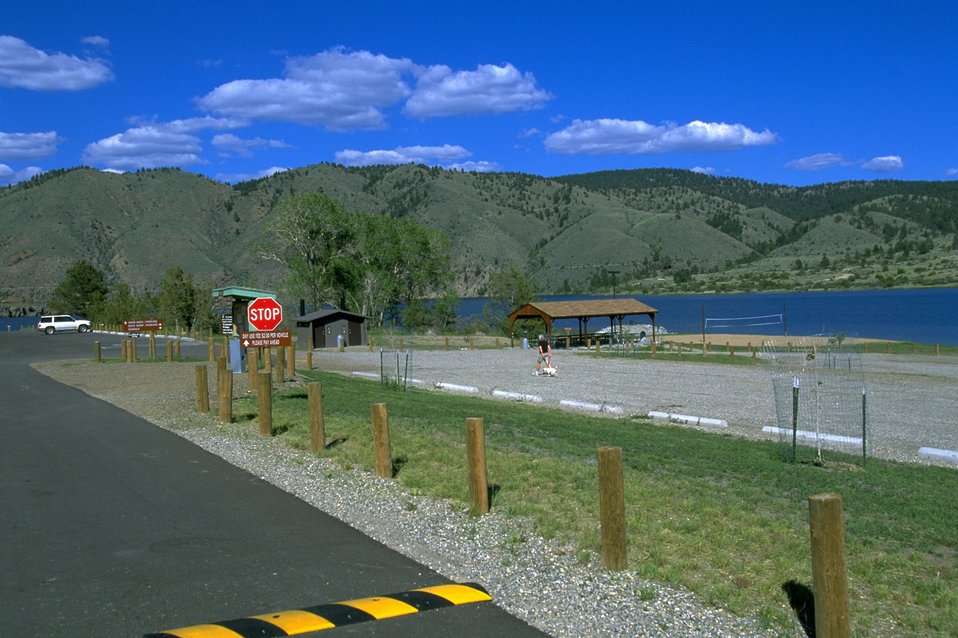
Entrance to Clark's Bay Day Use Area